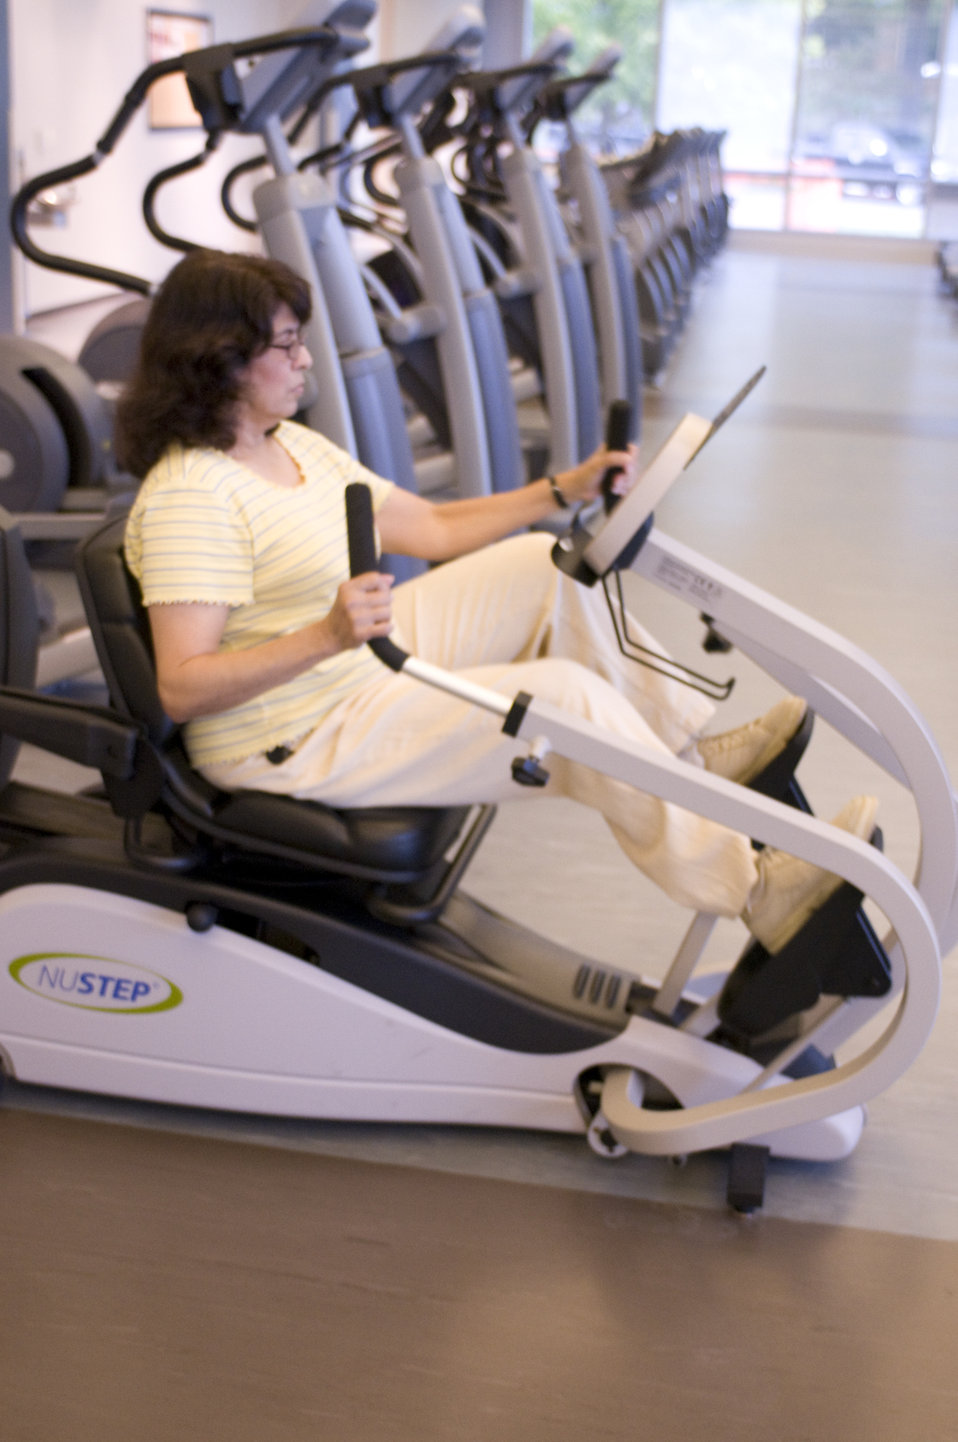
This image was captured on one of the Centers for Disease Control's (CDC) campuses, in the facility's fitness center, where a number of scheduled group classes are provided for employees' health and enjoyment. In this particular view, a female CDC staffer was making use of a NuStep machine, which in a seated position, works both the upper body, and the lower body in a simultaneous aerobic fashion.